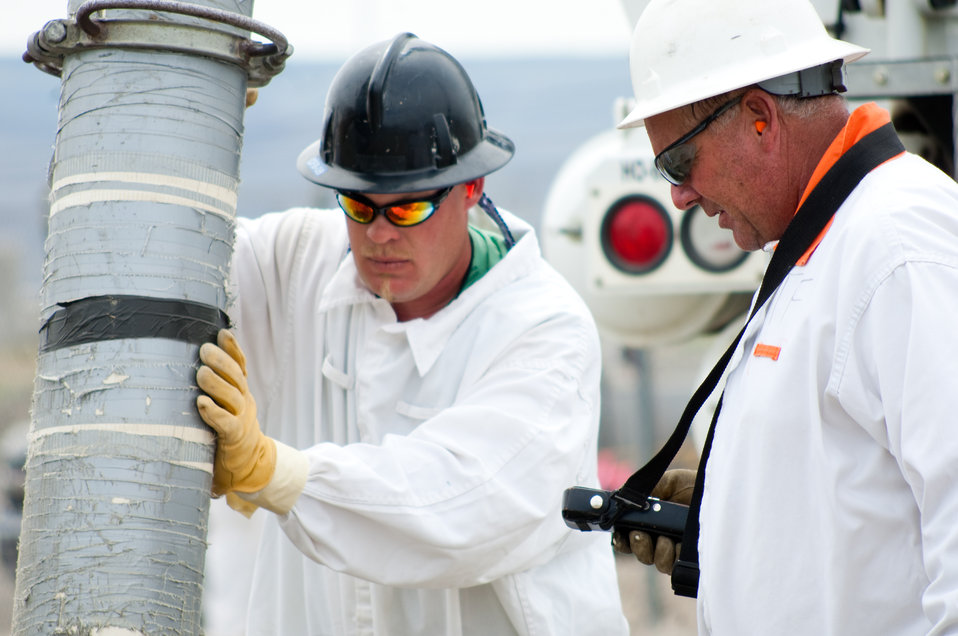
ORP Barrier

Crews recently completed work on an interim moisture barrier over the top of a Hanford tank farm. The ARRA-funded project will prevent rain and snow melt from driving leaked tank waste deeper into the soil.